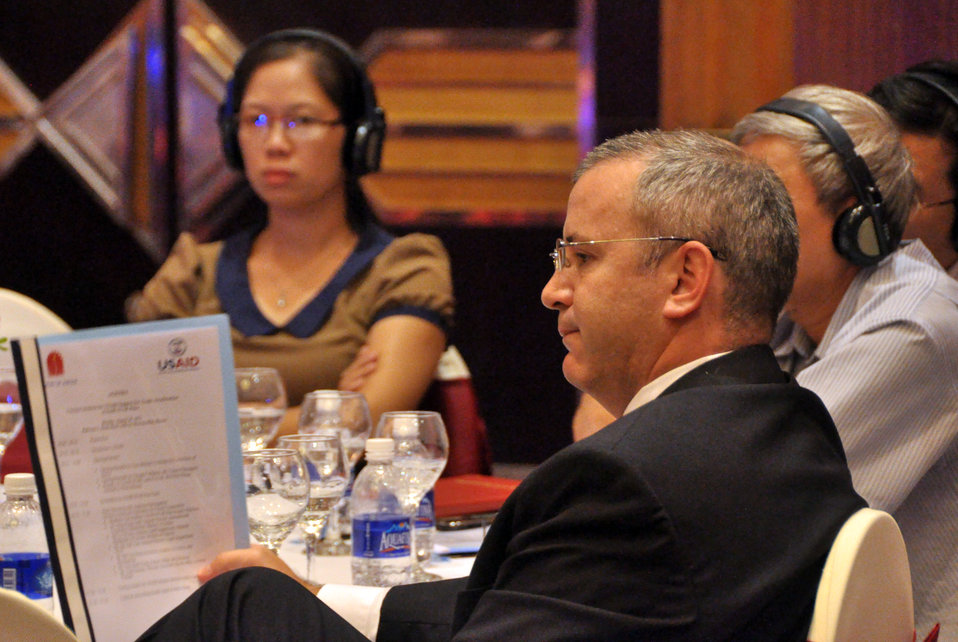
USAID's Support for Trade Acceleration Project (USAID STAR Plus) Closing Ceremony

Hanoi, August 26, 2013.